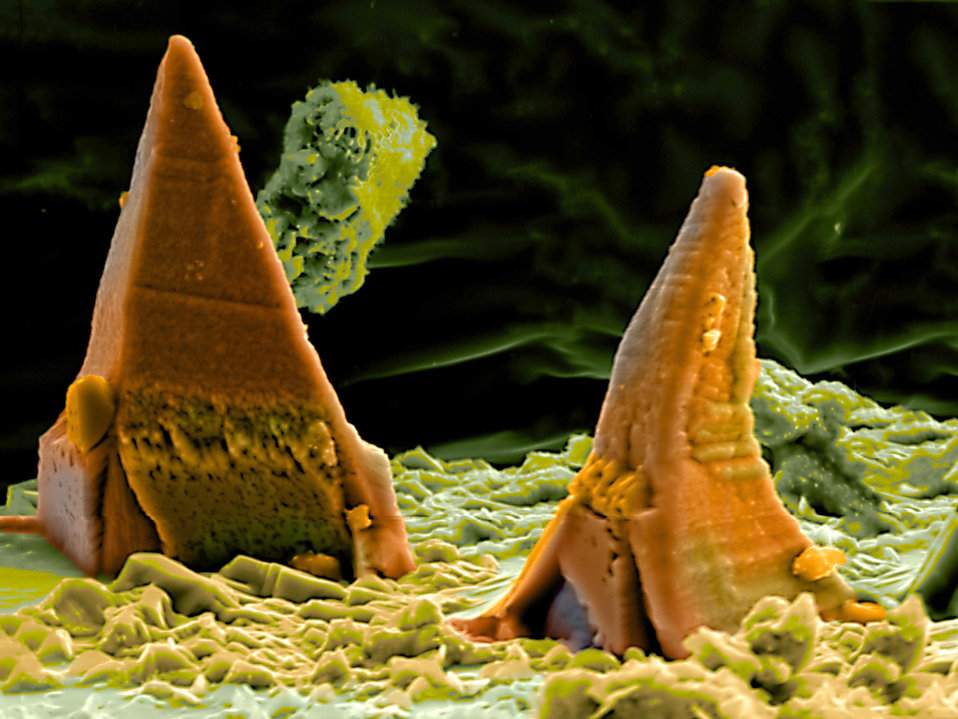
Shown is a picture taken with an electron microscope, shows the aftermath of fayalite reacting with gaseous CO2 to form siderite, thereby capturing the CO2 in a solid, stable form.
Capturing and storing carbon dioxide (CO2) and other greenhouse gases deep underground is one of the most promising options for reducing the effects of energy production on the earth. Scientists at PNNL are using electron microscopes to understand the reaction of CO2 and minerals found underground.